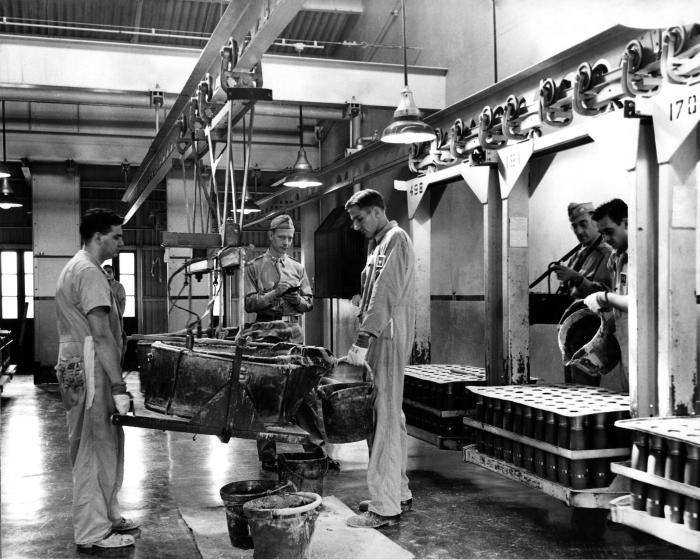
This historical 1943 image, which was provided by the Center for Disease Control's (CDC), National Institute for Occupational Safety and Health (NIOSH), depicted a number of men engaged in the process of filling explosive ammunition shells with molten TNT (trinitrotoluene) inside a military ordnance plant. Seen here, were three men who were plant employees, and two Public Health Service (PHS) officers, who were observing, taking notes, and acquiring air samples, which they'd later test for the presence of the toxic TNT. Trinitrotoluene will irritate the skin upon contact, and actually will change the skin's color to a bright yellow-orange. Prolonged exposure leads to liver damage, anemia, enlargement of the spleen, and a compromised immune system, to name a few of its negative effects. TNT is also a known carcinogen. Neither the PHS officers, nor the factory employees wore any filtered breathing masks.